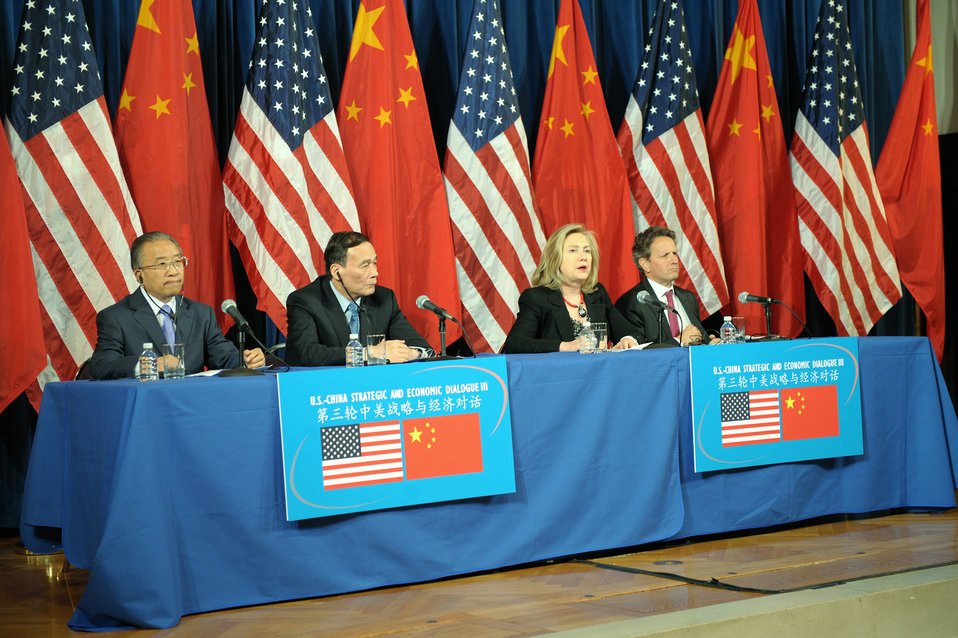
Secretaries Clinton, Geithner, and Chinese Premier Wang and Chinese State Councilor Dai Deliver Joint Closing Remarks

U.S. Secretary of State Hillary Rodham Clinton, second from right, and U.S. Secretary of the Treasury Timothy Geithner, far right, along with Chinese Premier Wang and Chinese State Councilor Dai deliver joint closing remarks, in the U.S. Department of the Interior’s Sidney R. Yates Auditorium in Washington, D.C., on May 10, 2011.